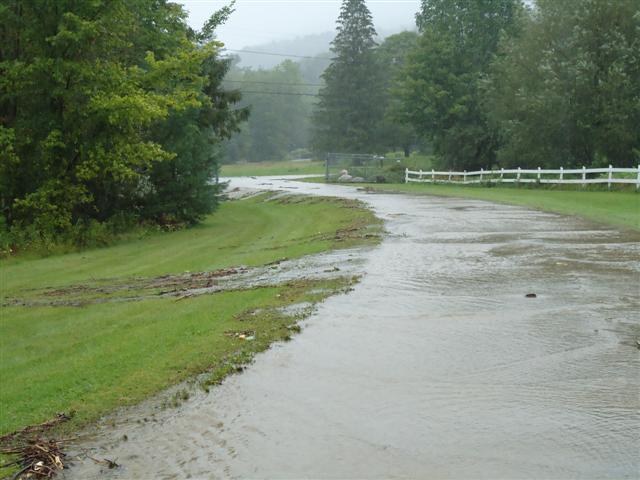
Storm damage at Eisenhower National Fish Hatchery in Vermont

Road flooding.